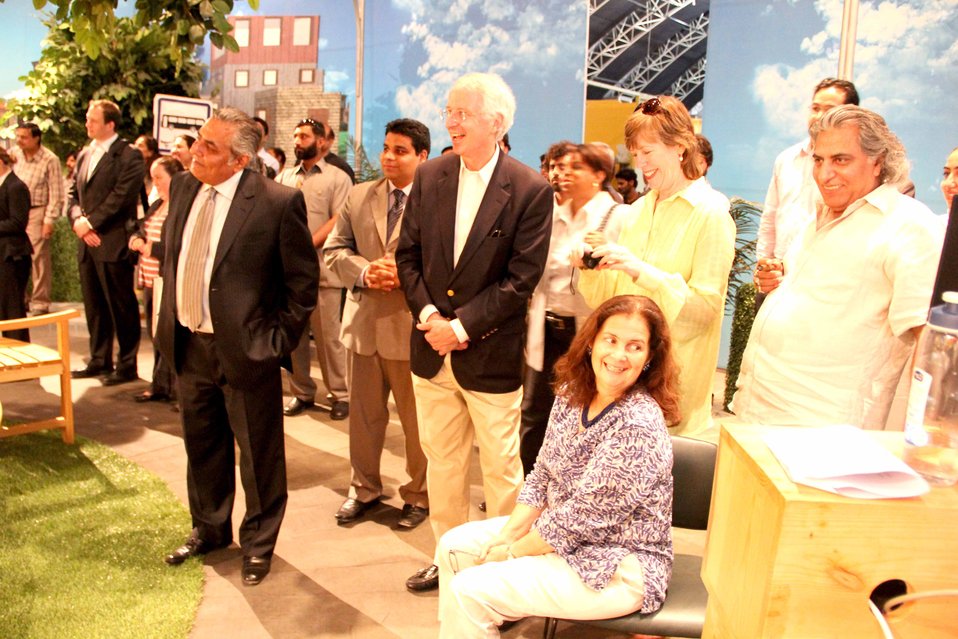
U.S. Ambassador’s Visit to Sim Sim Hamara Highlights U.S. Commitment to Improved Children’s Education in Pakistan at Lahore on 28 April, 2012

Mr. Cameron Munter and his wife Dr. Marliyn, Usman Pirzada on the set of Sim Sim Hamara